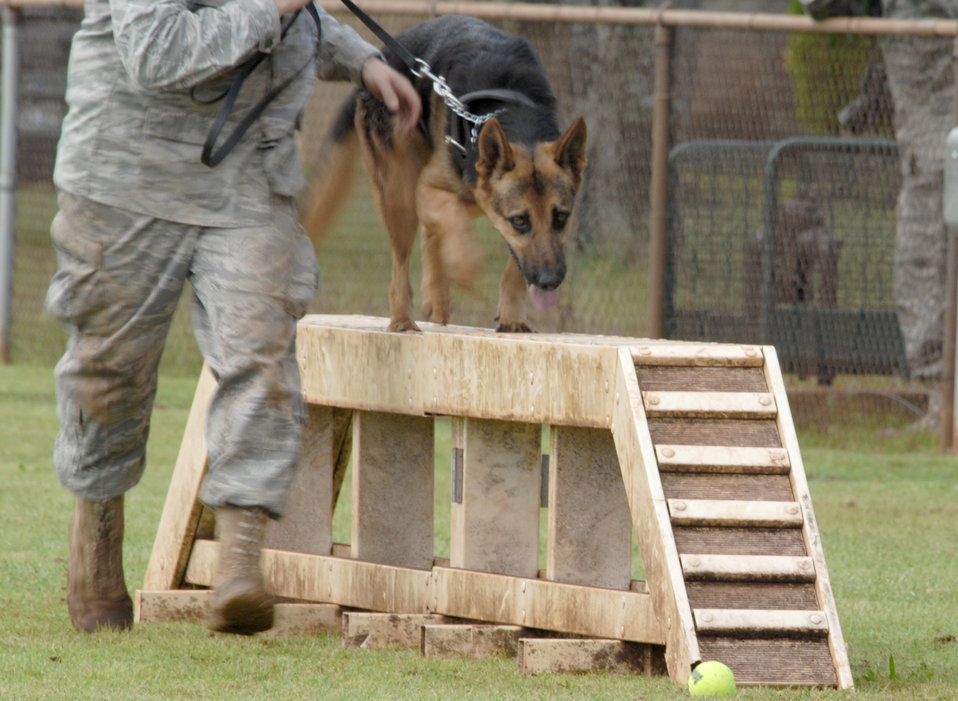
Working dog competition

Staff Sgt. Nicholas Vollweiler and his two-year-old dog, Laci, navigate an obedience course Nov. 19, 2010, at Schofield Barracks, Hawaii. Thirty-nine handlers from the Army, Navy, Marine Corps, and Air Force brought their K-9s to the competition which paced the teams through a series of events.